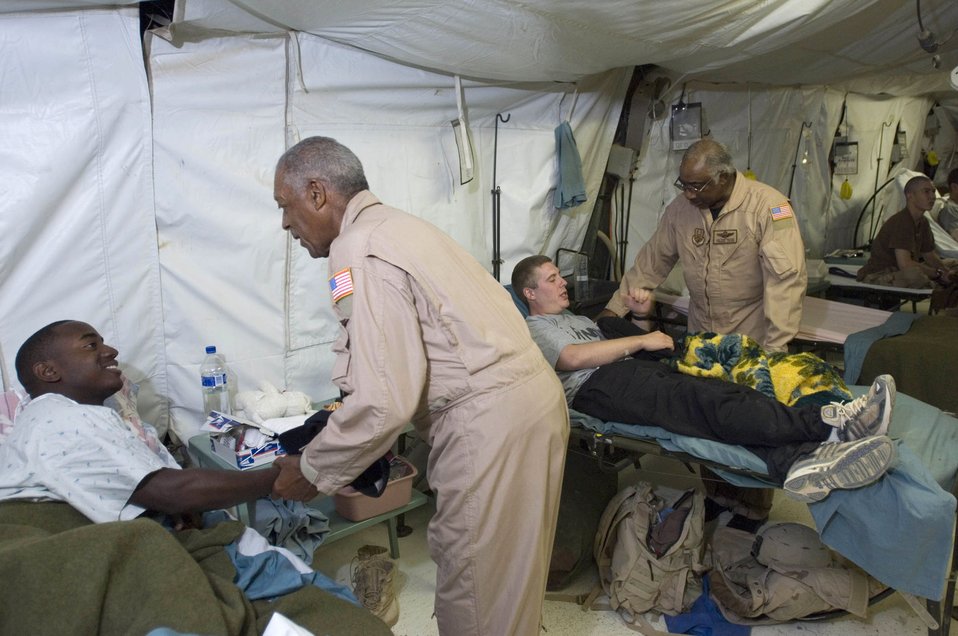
Tuskegee Airmen

BALAD AIR BASE, Iraq (AFPN) -- Retired Tech. Sgt. George Watson visits Marine Lance Cpl. Michael McMillan (left) while Retired Col. Dick Toliver talks to Army Sgt. Thomas Cahill. The Tuskegee Airmen shared stories, encouragement, smiles and thanked patients at the 332nd Expeditionary Medical Group's Air Force Theater Hospital in central Iraq on Oct. 27.